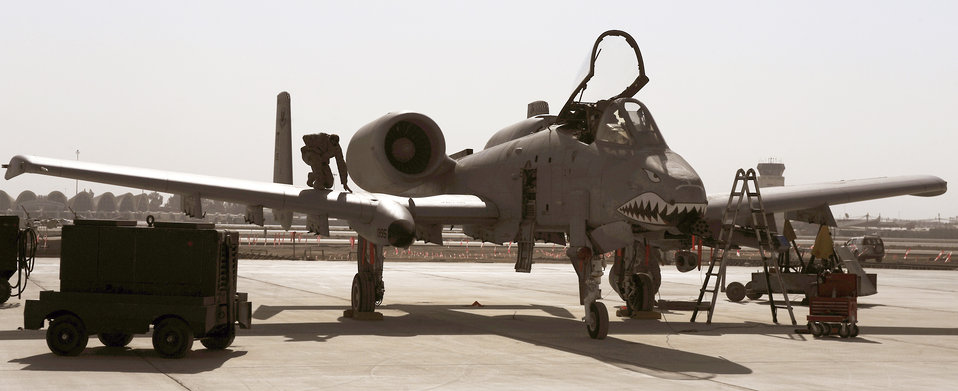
A-10C Thunderbolt II maintenance inspection

Staff Sgt. William Cooper conducts an intake and exhaust inspection on an A-10C Thunderbolt II, Jan. 11, 2011, at Kandahar Airfield, Afghanistan. Sergeant Cooper is an electro-environmental craftsman assigned to the 451st Expeditionary Aircraft Maintenance Squadron.